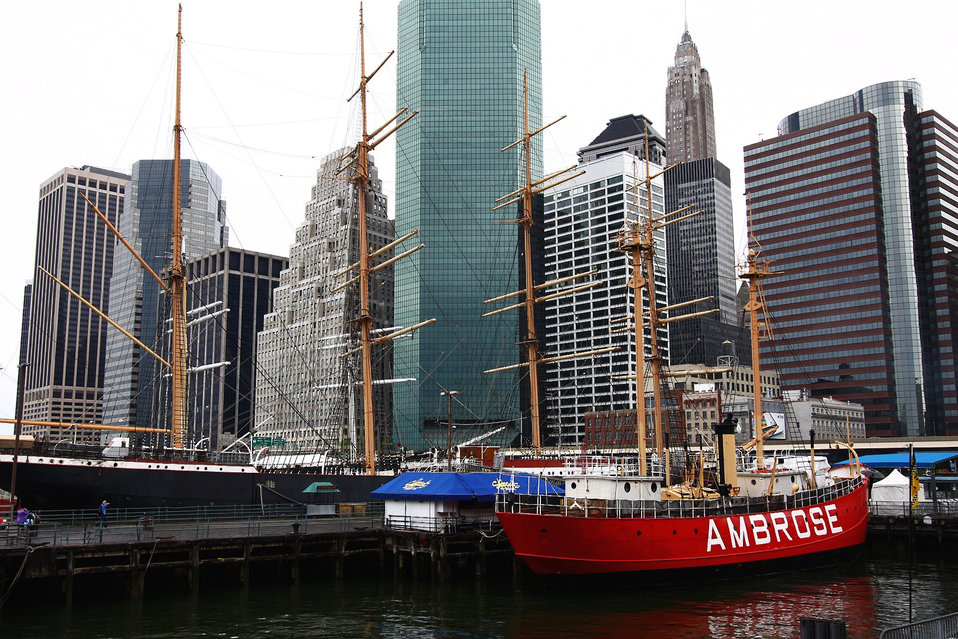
South street seaport

Landmark seaport located next to wall street and financial center.